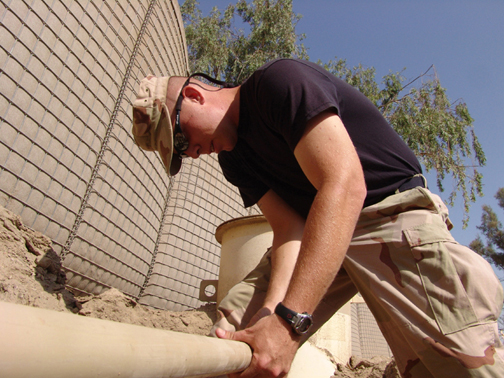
Deployed plumbers keep water flowing

BAGHDAD, Iraq -- Staff Sgt. Sam McCray installs a waste water pipe from a new lift station that pumps sewage to holding tanks. He is assigned to the 447th Expeditionary Civil Engineer Squadron and is deployed from Kadena Air Base, Japan.